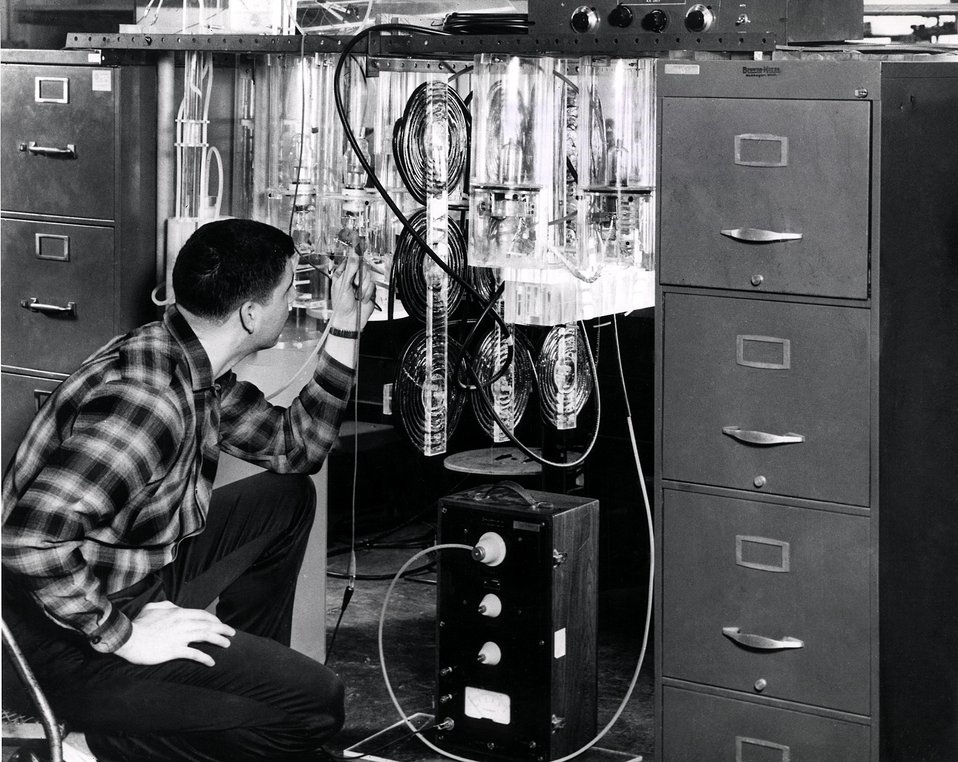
This photograph shows a portion of 100 kv voltage supply which is the heart of a 430 kv source.
c.1965